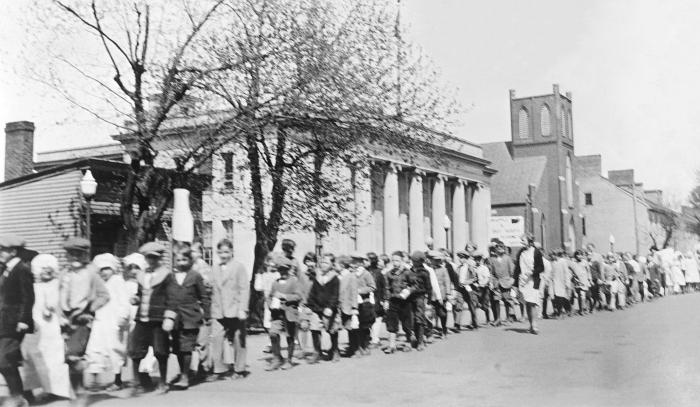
This historic photograph showed school children accompanied by adults, as they were marching during an observance of 'Child Health Day' in the state of Kentucky. The original image was scanned from a glass lantern slide donated by the Minnesota Department of Health, and is one of a historical collection of documents and photographs devoted to observances of Child Health Day in the United States.